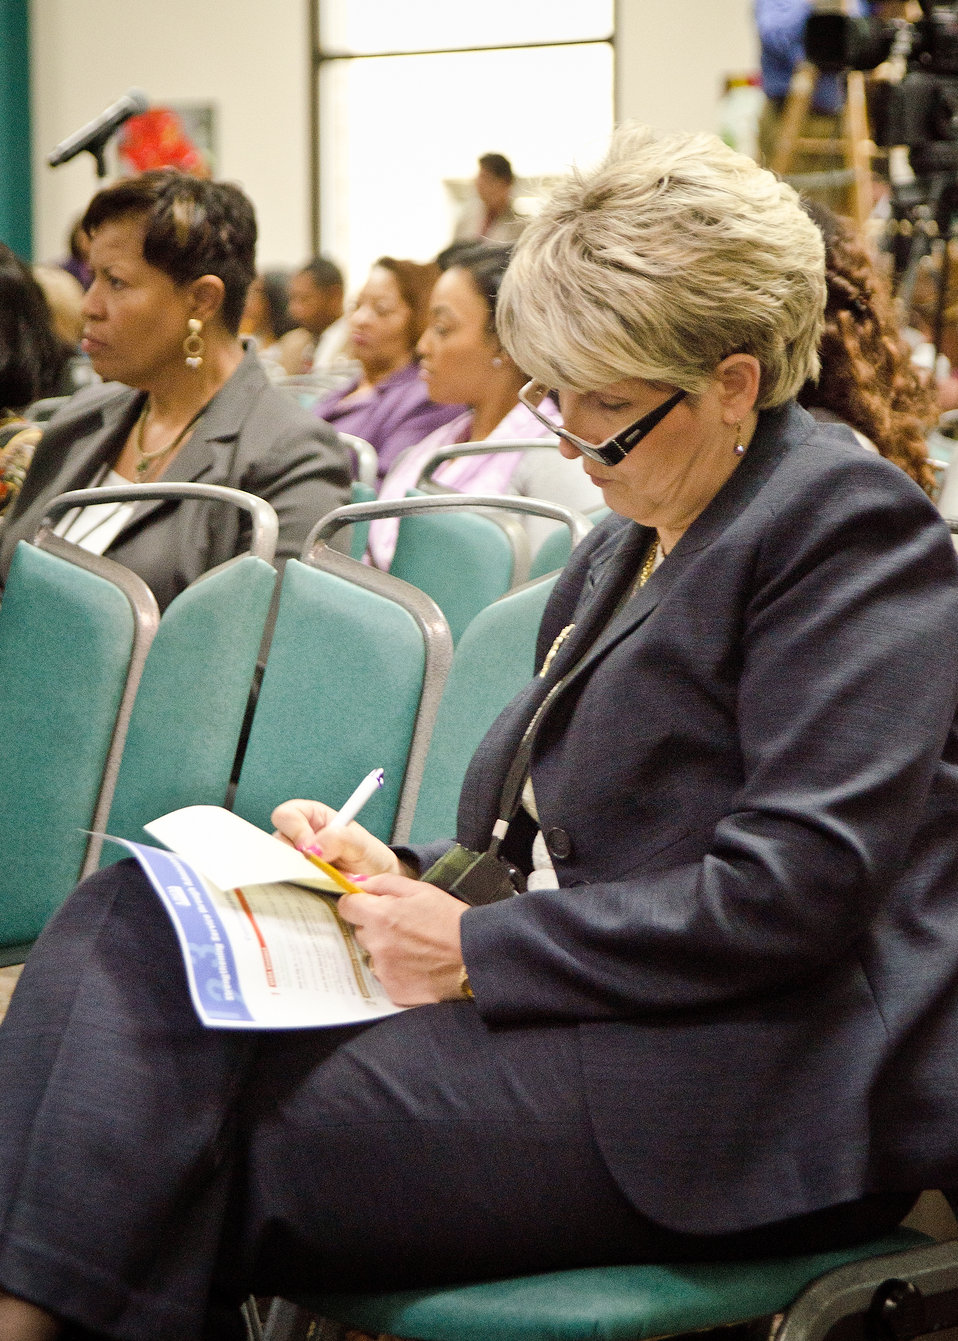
A U.S. Department of Agriculture (USDA) employee takes notes during the opportunity to ask questions about the Blueprint for Stronger Service Initiative and hear directly from the Secretary Vilsack during the Ask The Secretary event held in the South Building Cafeteria, in Washington, D.C., on Wednesday, March 21, 2012, The Blueprint for Stronger Service Initiative aims to build a modern and efficient service organization that is closely timed with technological innovations - and better suited to respond to 21st century agricultural challenges.